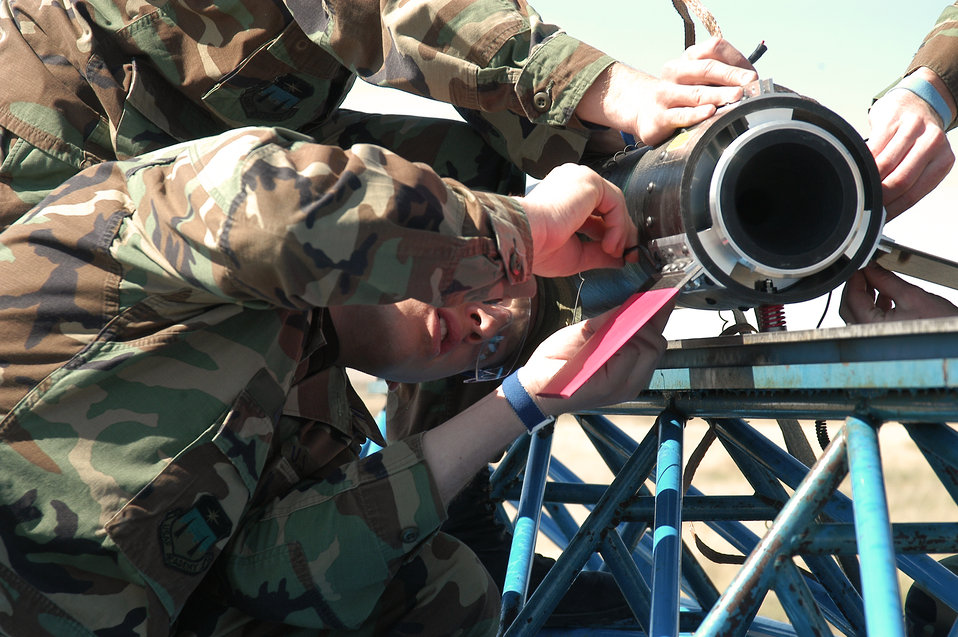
Rocket-powered final exam launches

PINON CANYON MANUEVER RANGE, Colo. -- Cadet 1st Class Abraham Leigh tightens a tail fin on to the FalconLaunch rocket April 30. During the program, cadets design, manage, build and launch a rocket as part of the Air Force Academy's Department of Astronautics course. The program progresses each academic year, with the eventual goal of creating a rocket which can deliver a 5-pound scientific or experimental payload to an altitude of about 60 miles.